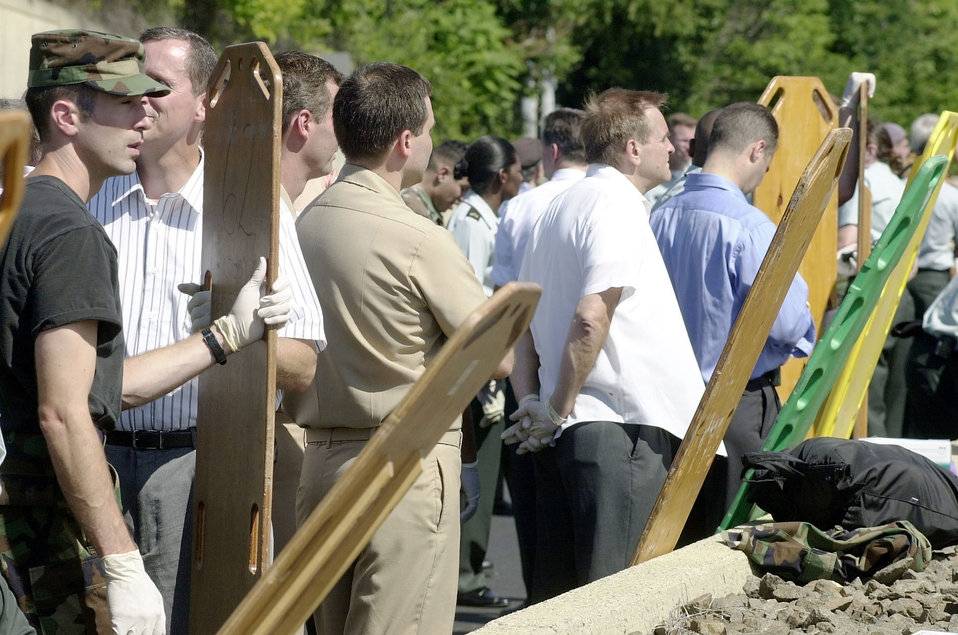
Stretcher crews

WASHINGTON -- Stretcher crews stand ready amongst a crowd of employees at the Pentagon after a highjacked commercial jetliner crashed into the building Sept 11, 2001. Military and civilians of all ranks helped by carrying injured people on stretchers to waiting ambulances. The Pentagon crash followed an attack on the twin towers of the World Trade Center in New York City in one of the worst terrorist actions in history.